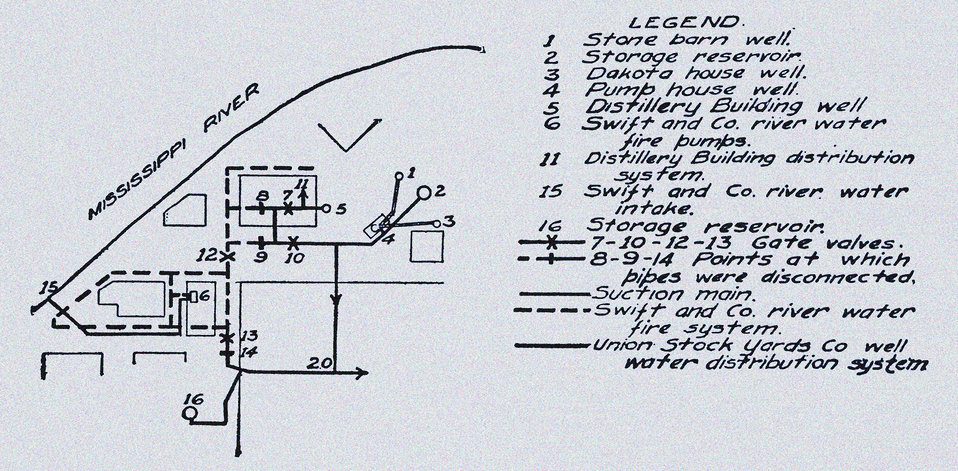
This historic diagram, which had been digitally enhanced and colorized, depicted cross-connections in the South St. Paul water system that contributed to a dysentery epidemic among employees of the St. Paul Union Stock Yards Co., South St. Paul, Minnesota in October, 1914. Published in 1915, this was one of a series of instructional drawings used by the Minnesota Board of Health to train its state public health workers.